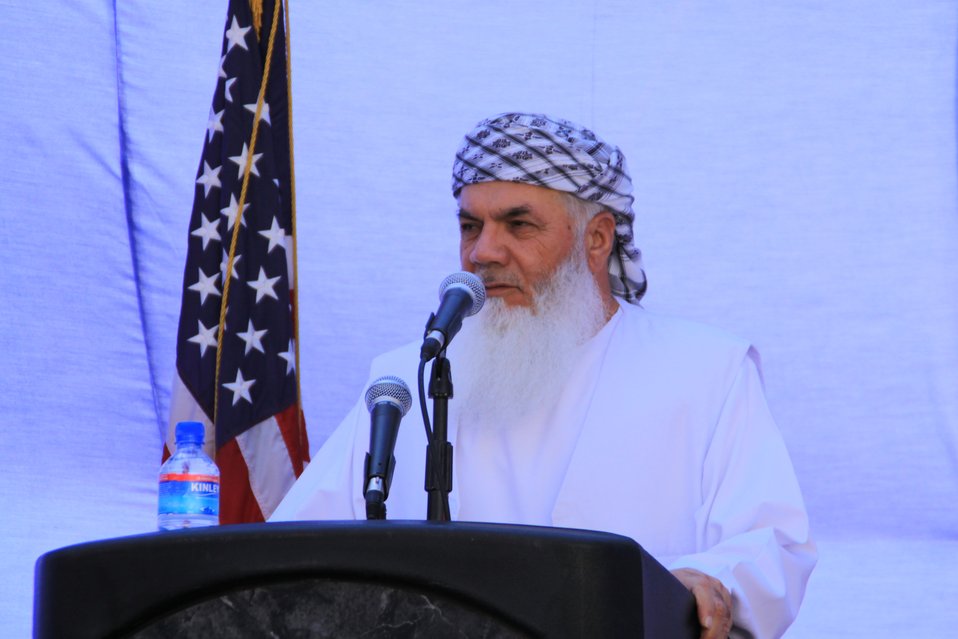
105 MW Tarakhil Power Plant Handover